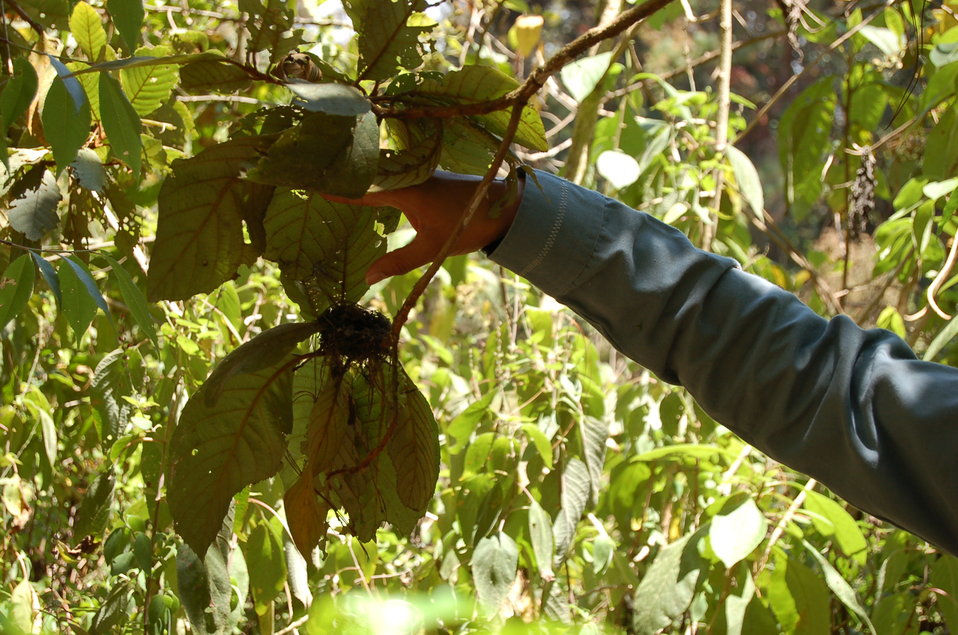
Creating habitat for hummingbirds, including appropriate nesting sites such as this plot reforested with native trees in Chiapas, Mexico. Supported by the Neotropical Migratory Bird Conservation Act.